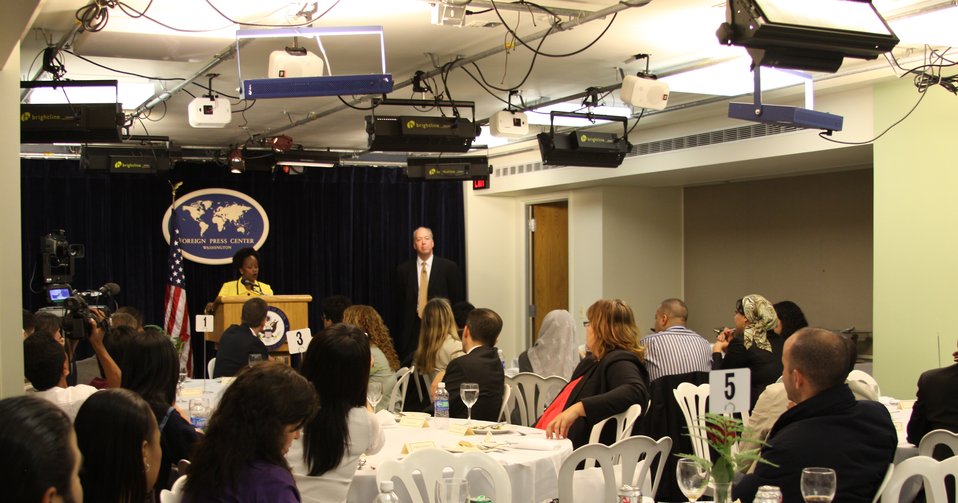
Assistant Secretary Brimmer Speaks to a Group of Foreign Journalists

Assistant Secretary of State for International Organization Affairs Esther Brimmer speaks to a group of foreign journalists at the Foreign Press Center in Washington, D.C., during a luncheon at the 2011 World Press Freedom Day Global Conference, on May 3, 2011.